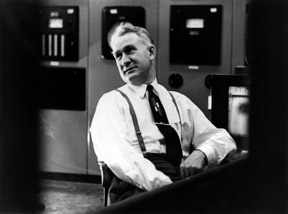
Walter H. Zinn.